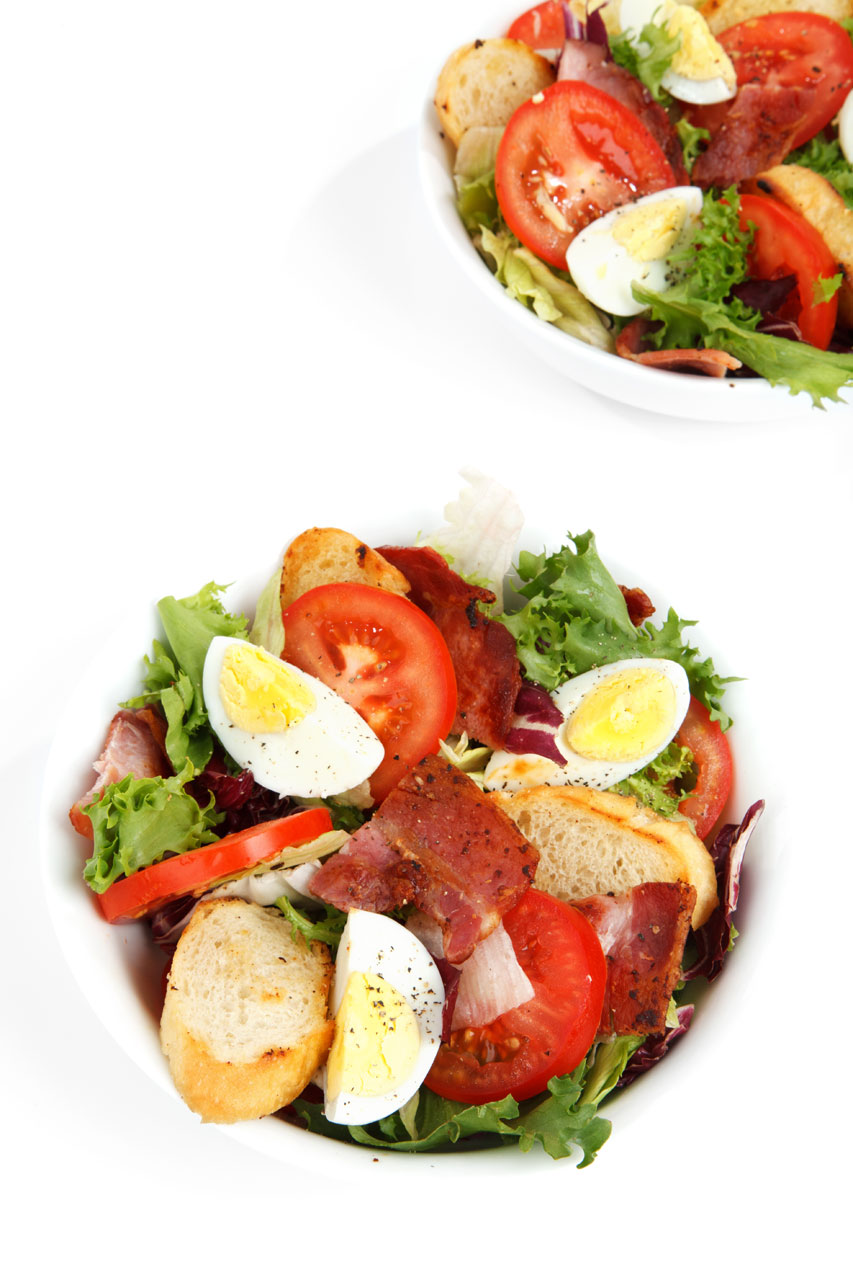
Fresh healty salad in bowls isolated on white background.